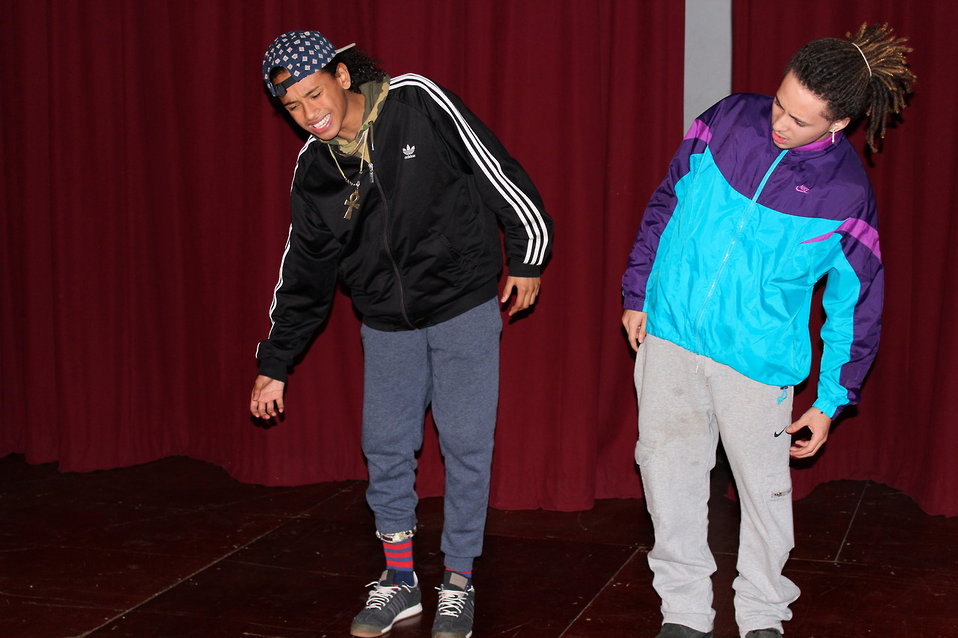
Youth Empowerment Program Poetry Slam held at Alternatives on Jan. 30 which was held to observe National Drug Facts Week and support youth in making healthy lifestyle choices.